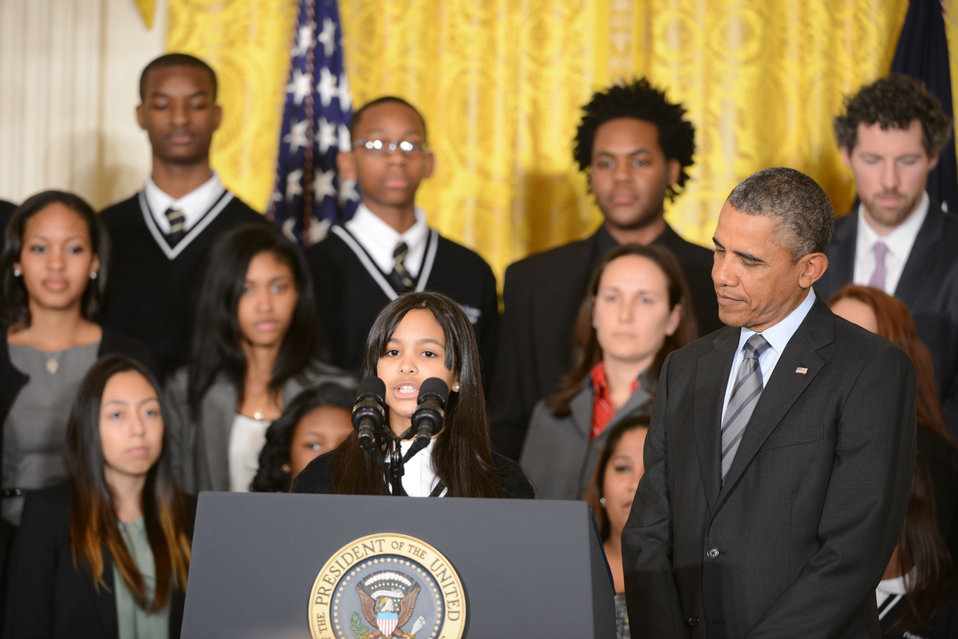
Harlem Children’s Academy ninth-grader Kiara Molina introduces President Barack Obama in the East Room of the White House on Thursday, Jan. 9, 2013. The President announced the first five “Promise Zones,” located in San Antonio, TX, Philadelphia, PA, Los Angeles, CA, Southeastern Kentucky, and the Choctaw Nation of Oklahoma.